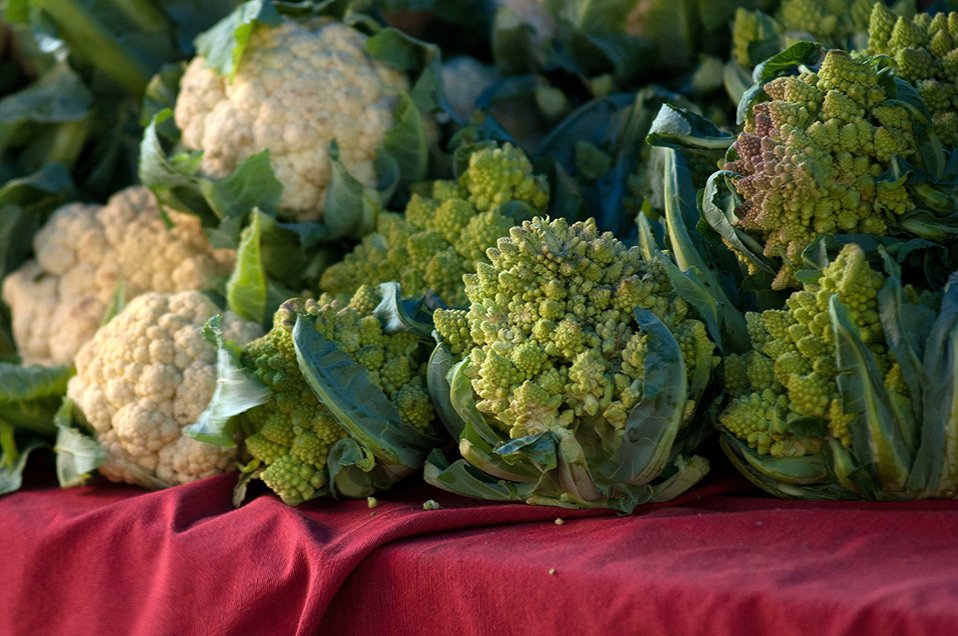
Worden Farm (www.wordenfarm.com) fresh picked organic cauliflower, left, and romanesco broccoli, right, are ready for sale at the Saturday Morning Market, in St. Petersburg, FL, on April 14, 2012. Worden Farm is a family farm that provides certified organic produce to Southwest Florida through community supported agriculture (CSA) membership programs and retail sale at several farmer’s (community) markets. Chris Worden, Ph.D. and Eva Worden, Ph.D. founded and operates the farm that employs more than 20 people. Growing certified organic crops in the coastal sandy soil has required them to develop innovative farming techniques which help the farm as well as assist the studies of universities and farm industry. There are several Worden Farm apprenticeships that provide hands-on training in all aspects of the farm, to include direct marketing at the Saturday Morning Market, or other market sites. The farm also holds culinary and gardening workshops, and other interactive educational events. One of their organic certifications is from the U.S. Department of Agriculture (USDA) and they have partnered with the USDA Natural Resources Conservation Service (NRCS) for soil conserving windbreaks and long tunnel structures to nurture seedlings and extend the growing season.